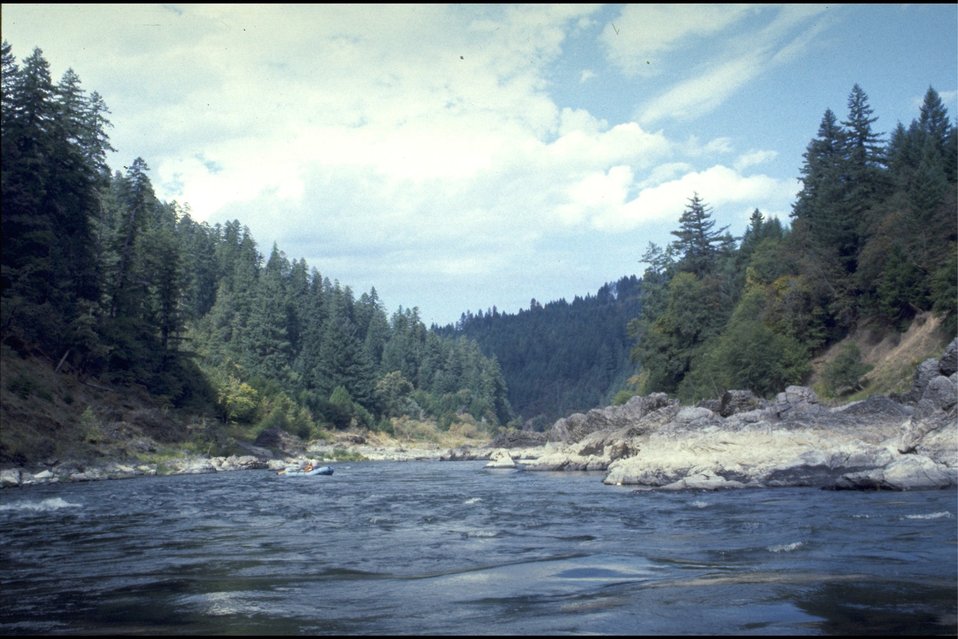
Looking down river above Mission Bar.